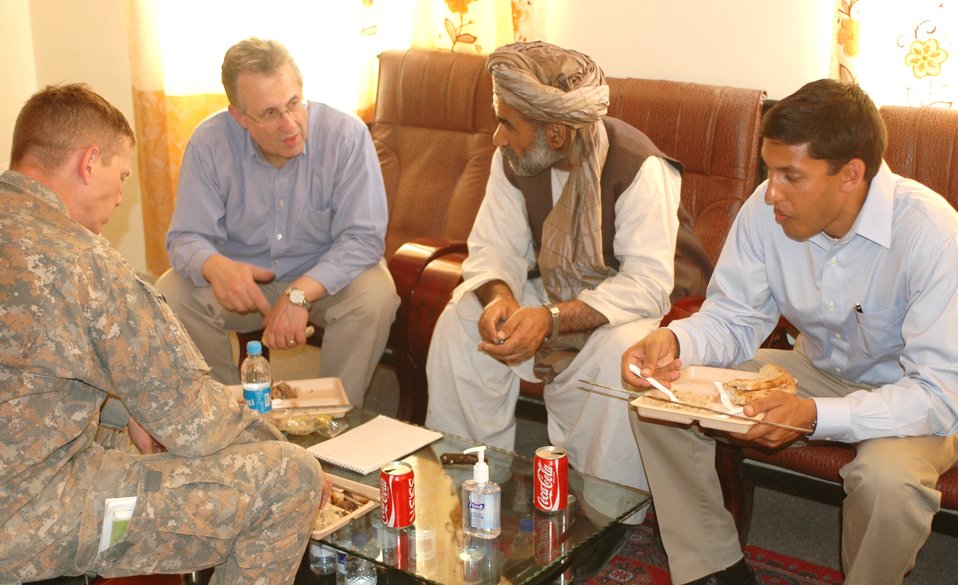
Dr Shah Visits Argandab April 10, 2010